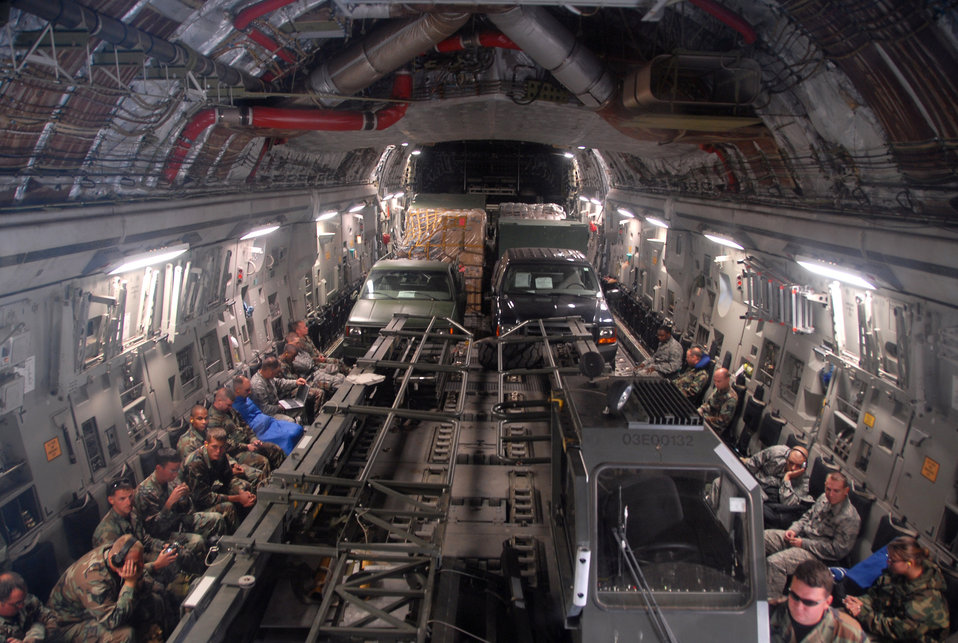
Altus crews help prepare for Hurricane Ike

Twenty-two Air Force specialists from the 617th Contingency Response Group from McGuire Air Force Base, N.J., prepare to travel with their equipment on a C-17 Globemaster III Sept. 10 at Kelly Field, Texas. The C-17 was flown by a crew assigned to the 58th Airlift Squadron from Altus AFB, Okla. The military members and cargo were flown to Harlingen, Texas, to equip an emergency evacuation due to Hurricane Ike.